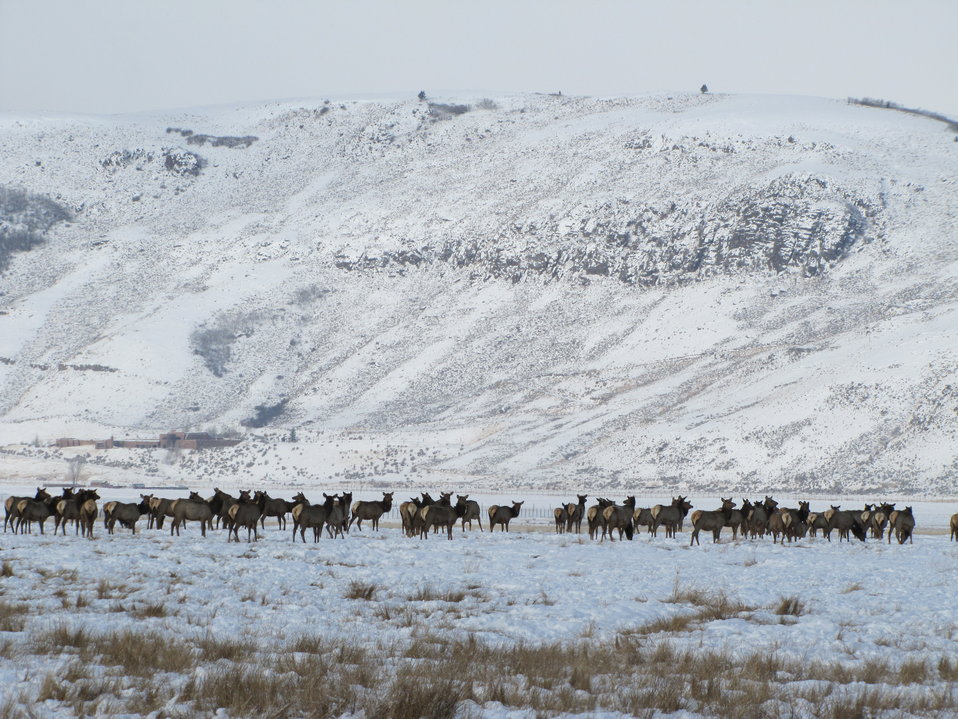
Elk Near East Gros Ventre Butte

A herd of elk gather near East Gros Ventre Butte, a hillside west of the National Elk Refuge.